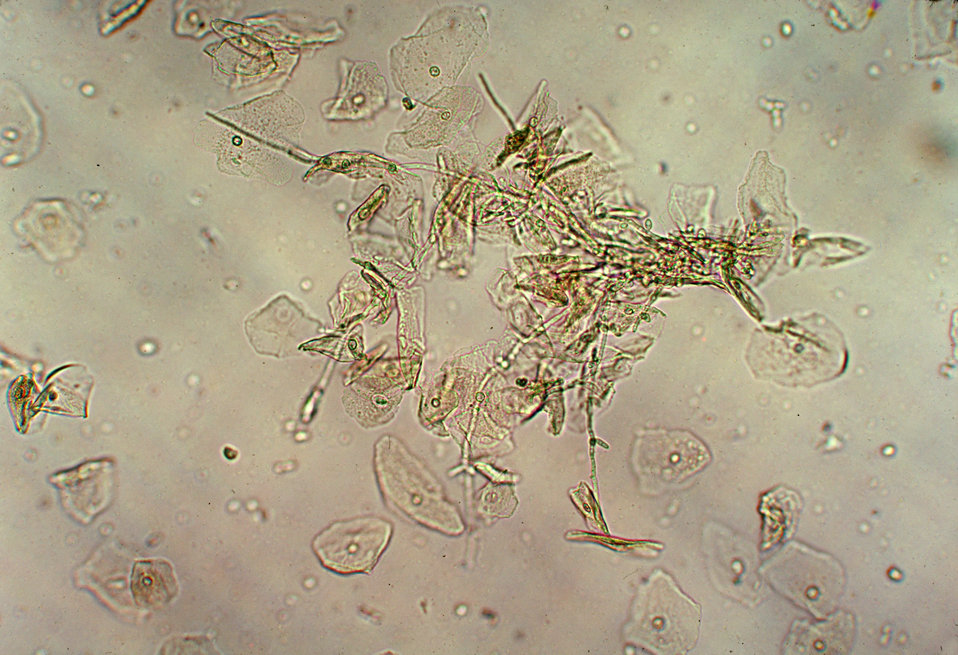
This photomicrograph of a vaginal smear identifies Candida albicans while using a wet mount technique.